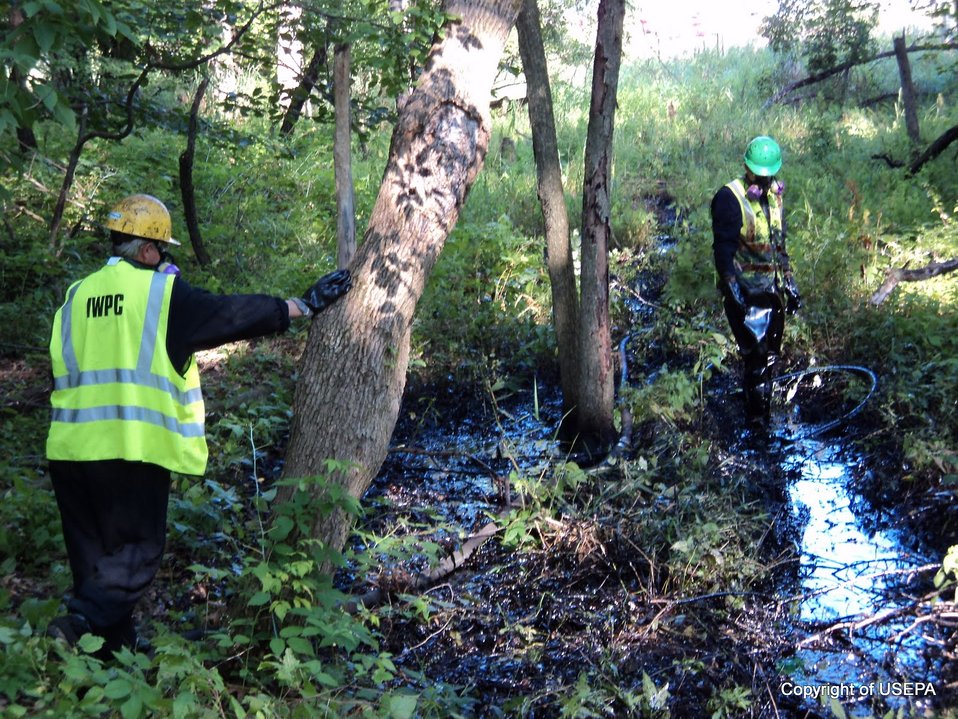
Vacuum operations

August 2, 2010 - Vacuum crews work to remove oil near the actual spill site.